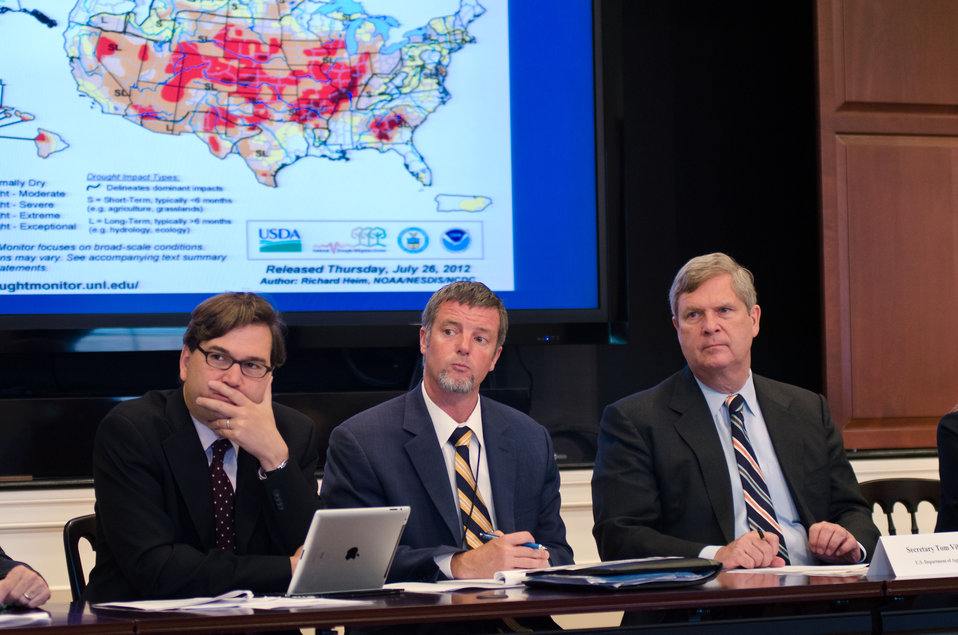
Left to right, National Economic Council Principal Deputy Director Jason Furman, White House Domestic Policy Council Rural Affairs Senior Policy Advisor Doug McKalip, Agriculture Secretary Tom Vilsack listen to council members and stakeholders, during a meeting of the White House Rural Council at the Executive Office Building in Washington, D.C. on Friday, July 27, 2012 to update on the Administration response to the drought and explore ways to assist American farmers and ranchers suffering in its affects. Following President Obama’s instructions of using existing programs to support struggling farmers and ranchers the U.S. Department of Agriculture (USDA) has implemented several processes to assist American farmers and ranchers. USDA has streamlined drought disaster declarations directly from Drought Monitor data, allowed nearly 30 million acres under the Conservation Reserve Program (CRP) to be used for emergency haying or grazing, lowered payment reduction for CRP lands that qualify for emergency haying and grazing in 2012, from 25% to 10%, allowed producers to modify current Environmental Quality Incentives Program (EQIP) contracts to allow for grazing, livestock watering and other conservation activities to address drought conditions, and has authorized haying and grazing of Wetlands Reserve Program (WRP) easement area in drought-affected areas where haying and grazing is consistent with conservation of wildlife habitat and wetlands, and reduced the interest rate for Farm Service Agency (FSA) Emergency loans from 3.75% to 2.25%.